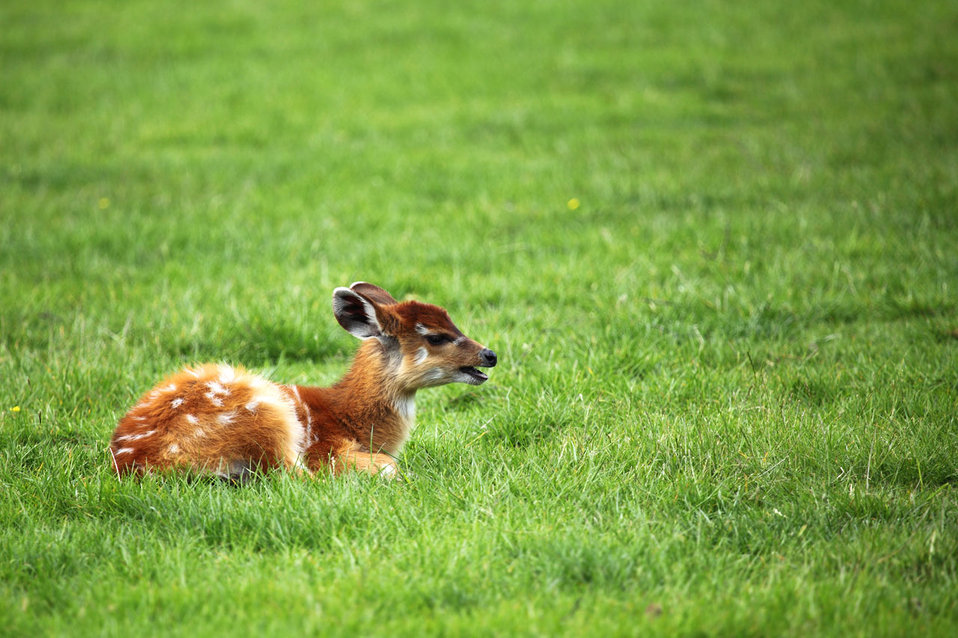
Young antelope calling his mother.